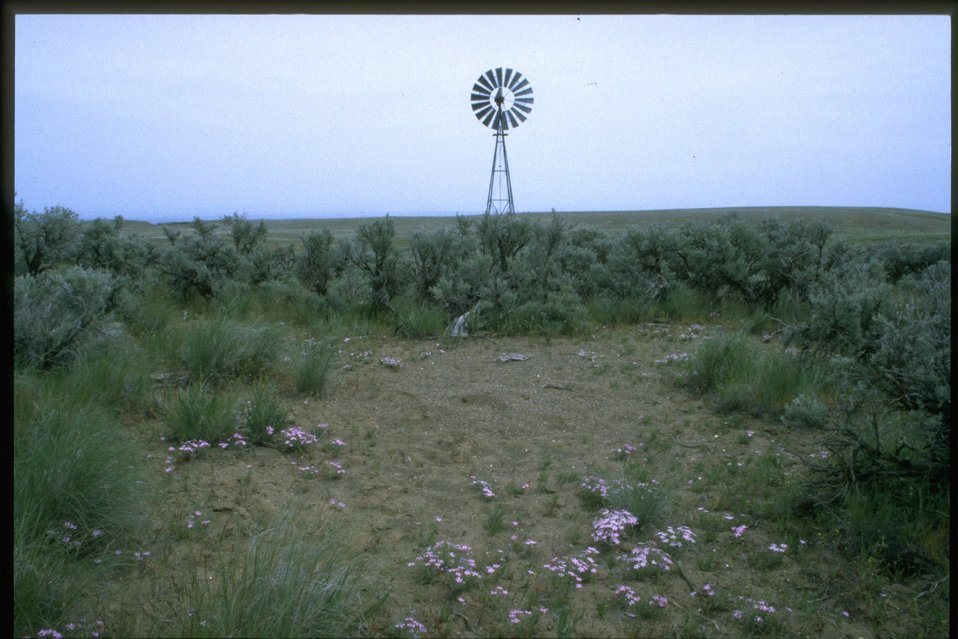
Wind Mill with Phlox wildflowers in foreground.